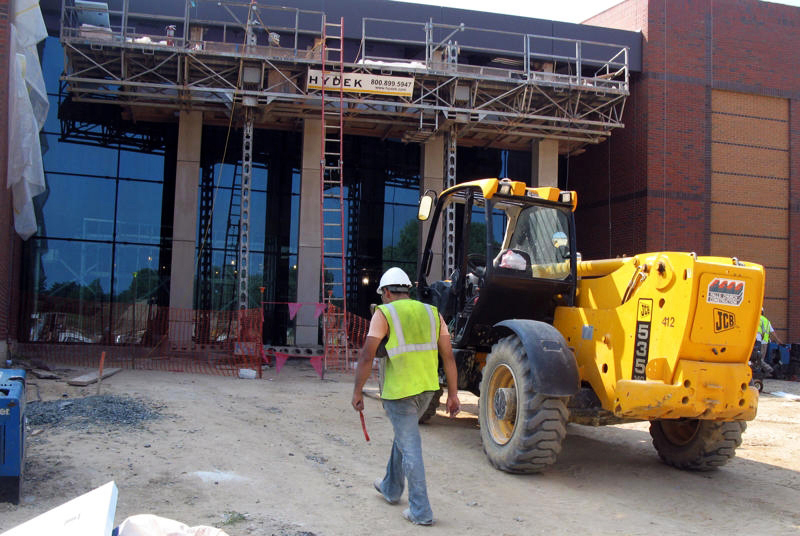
Realignment, closure plan continues on track

Crews are ahead of schedule on construction of a new facility to house the Defense Media Activity when it moves to Fort Meade, Md., as part of the 2005 Base Realignment and Closure Plan.